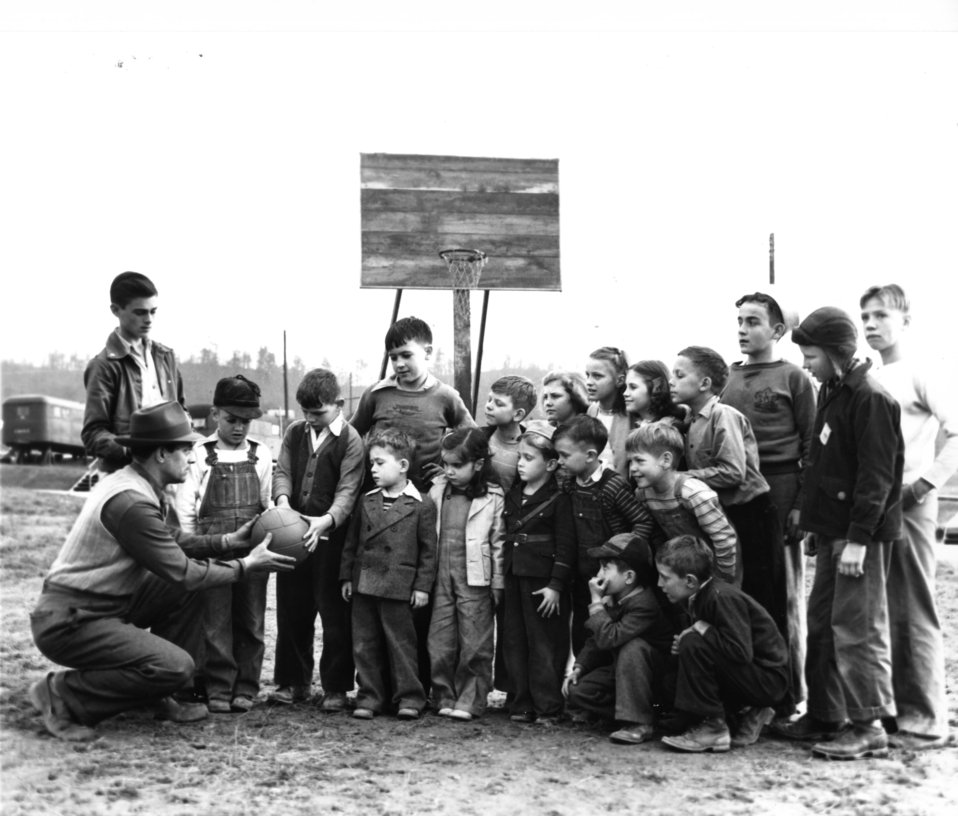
Recreation at Oak Ridge